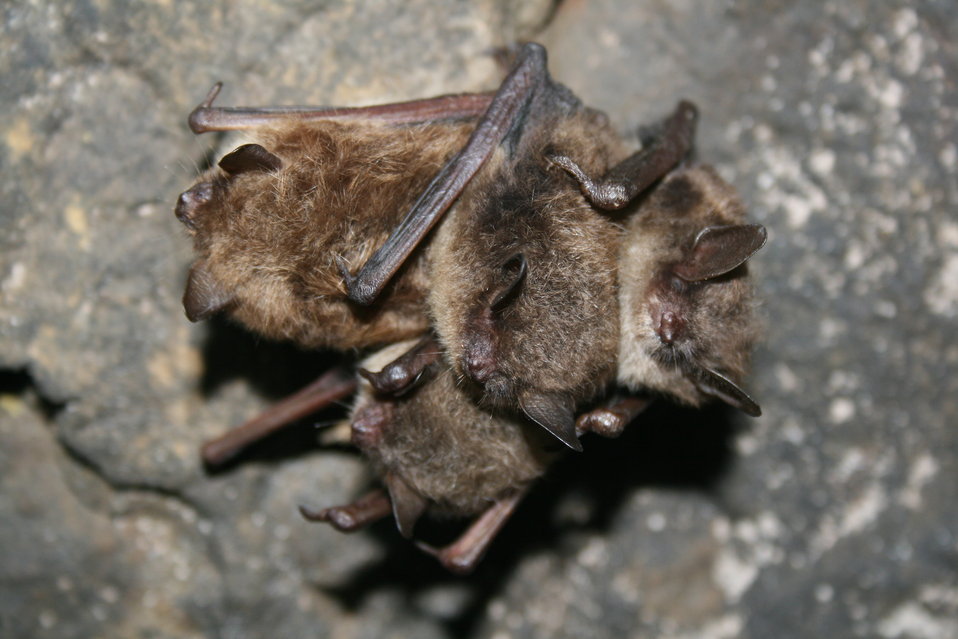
Hibernating bats